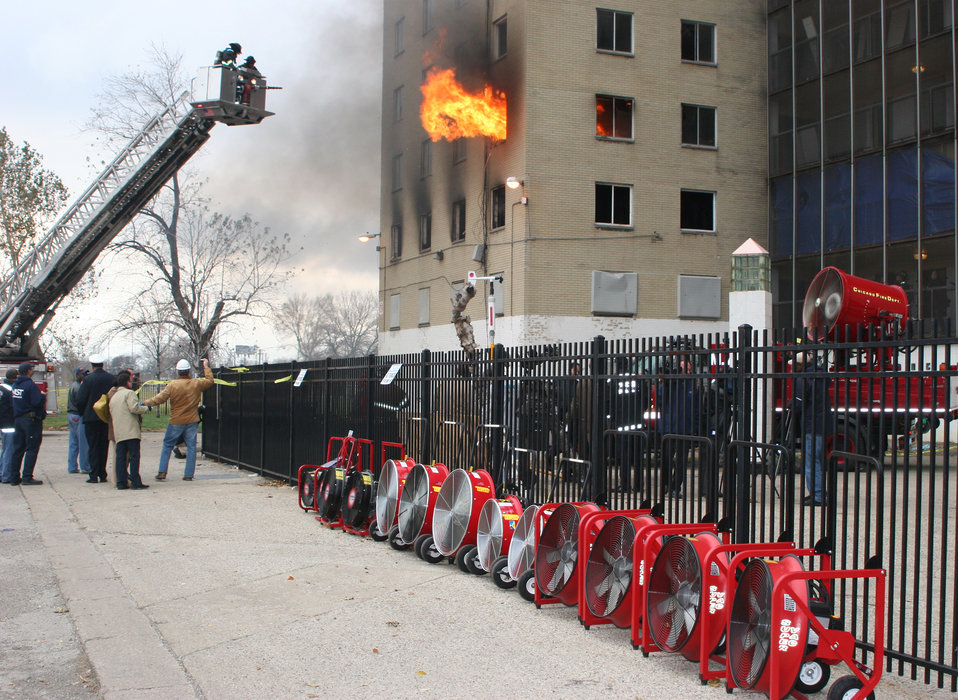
High-Rise Fire Test; Positive Pressure Ventilation Fans